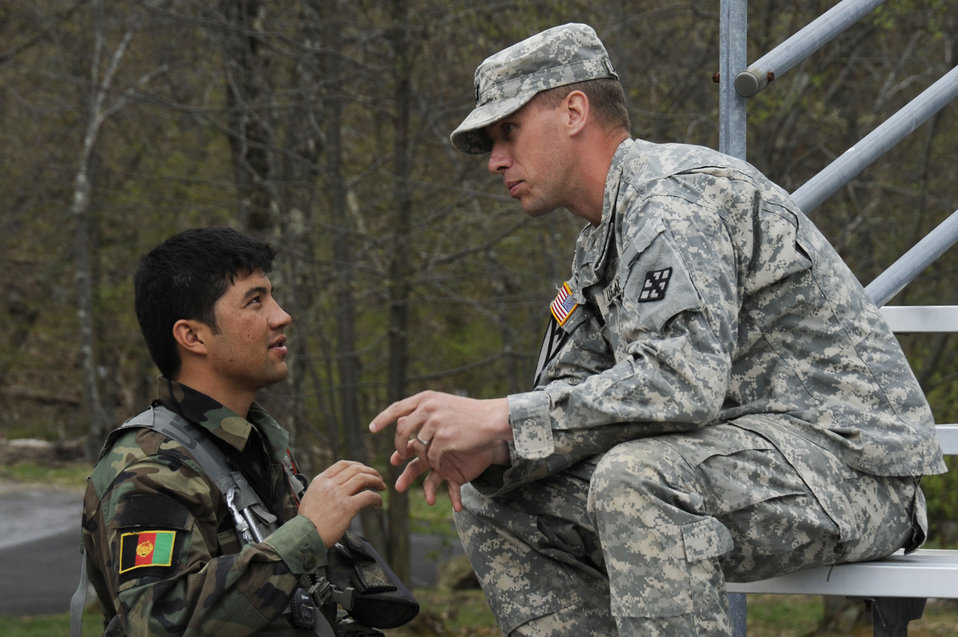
2012 Sandhurst Competition

An Afghan cadet consults with his host nation adviser at the U.S. Military Academy April 18, 2012, in West Point, N.Y. Cadets from military academies and colleges from around the world were invited to participate in the 2012 Sandhurst Competition. The competition was designed to promote excellence among cadets.